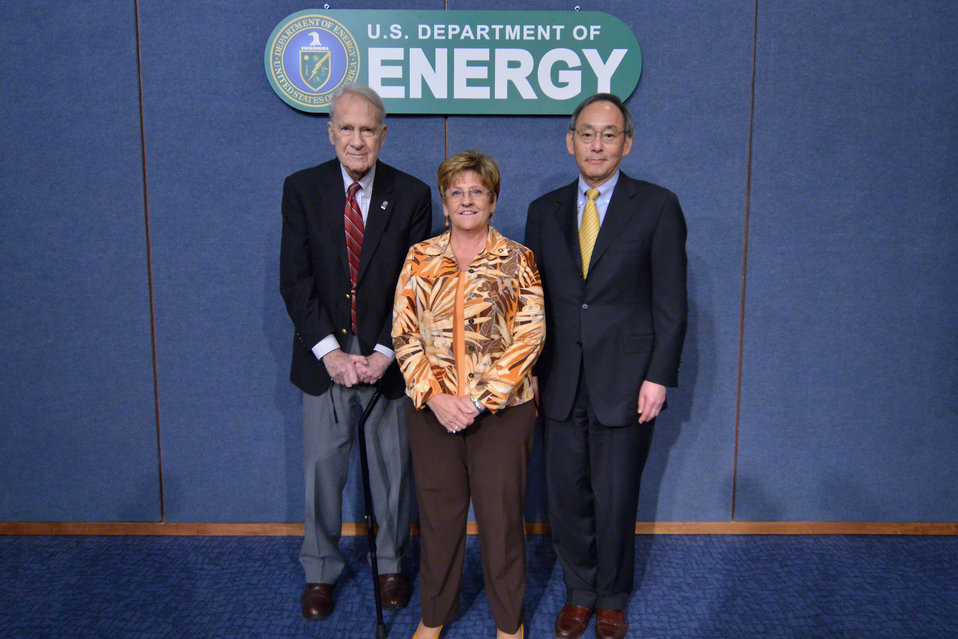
1 EM

Kay Rash, a charter employee from the Office of Environmental Management with Secretary Steven Chu, current Secretary of Energy, and Secretary James Schlesinger, first Secretary of Energy.